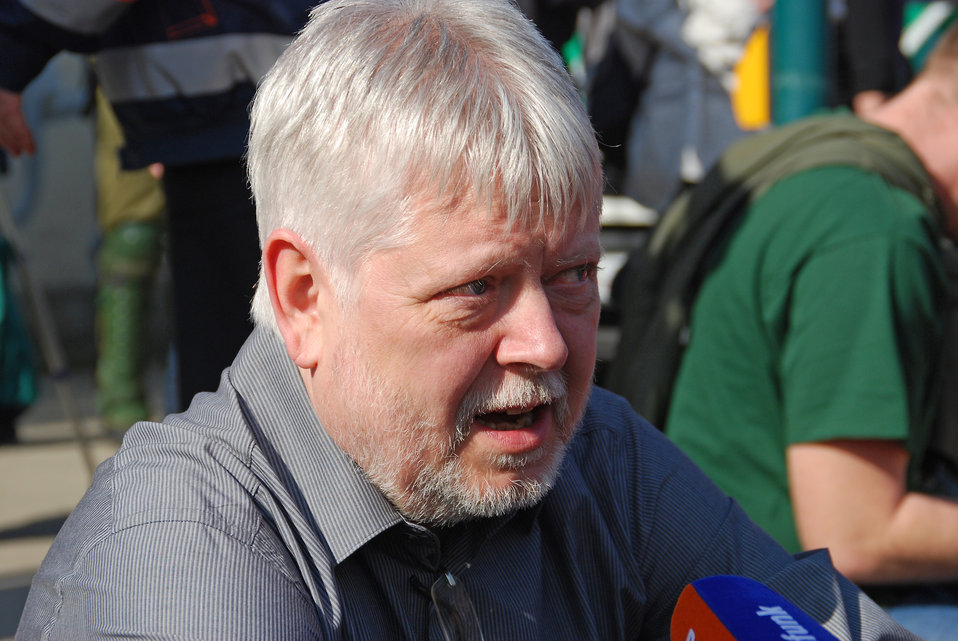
Proteste gegen den Nazi-Aufmarsch am 24.3.2012 in Frankfurt (Oder), mit Helmuth Markov, Finanzminister des Landes Brandenburg